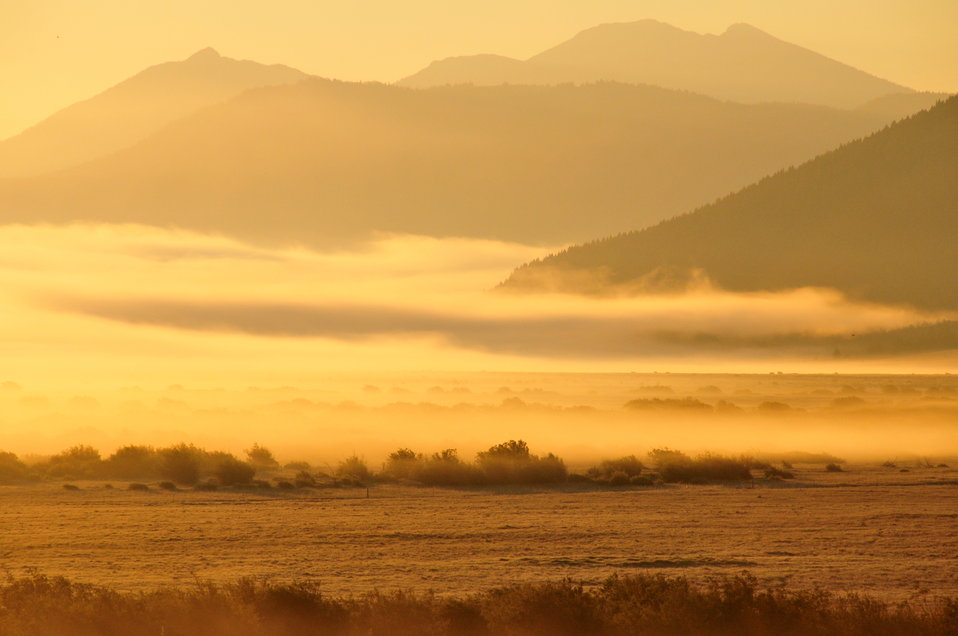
Foggy Sunrise Red Rock Lakes NWR